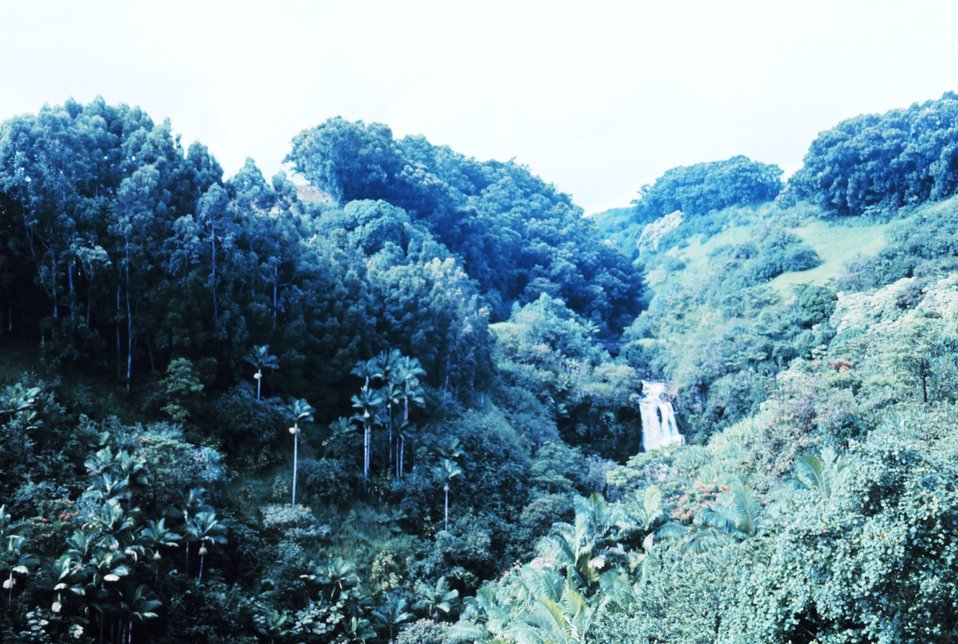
A beautiful waterfall